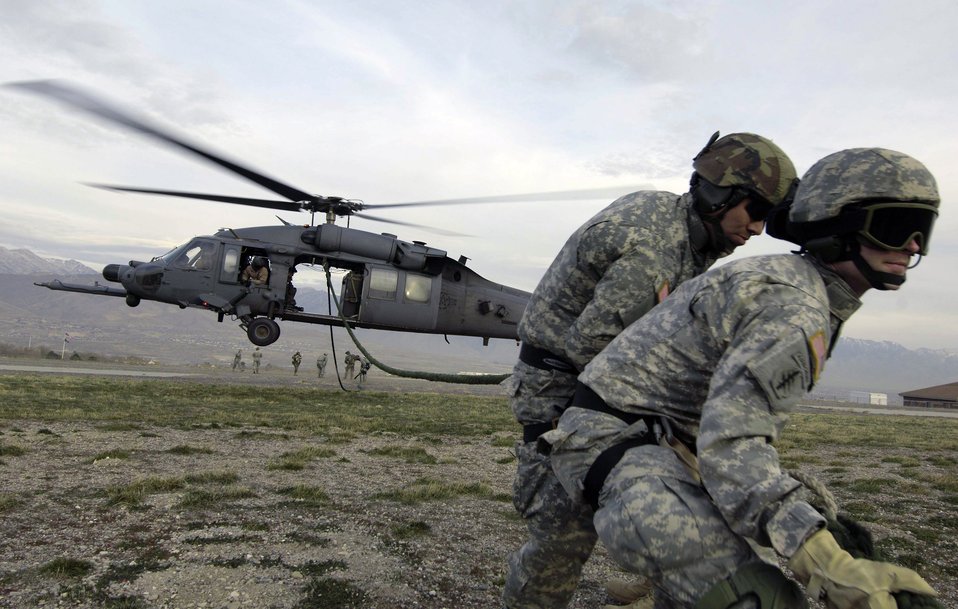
Combat search and rescue training in Utah

Utah National Guard Soldiers and 19th Special Forces members retrieve a fast rope after being dropped into a landing zone by an HH-60 Pave Hawk during a combat search and rescue integration exercise Nov. 8 at Camp Williams, Utah. Members of the 34th Weapons Squadron from Nellis AFB led the search and recovery training. The exercise expanded the integration with Utah's 211th Aviation Group AH-64 Apache Joint Rotary Wing, 4th Fighter Squadron F-16 Fighting Falcon assets from Hill AFB, Utah, and special operations forces. Exercise participants also conducted extensive joint combat search and rescue operations against surface-to-air threats. The exercise is being run held Nov. 6 through 15.